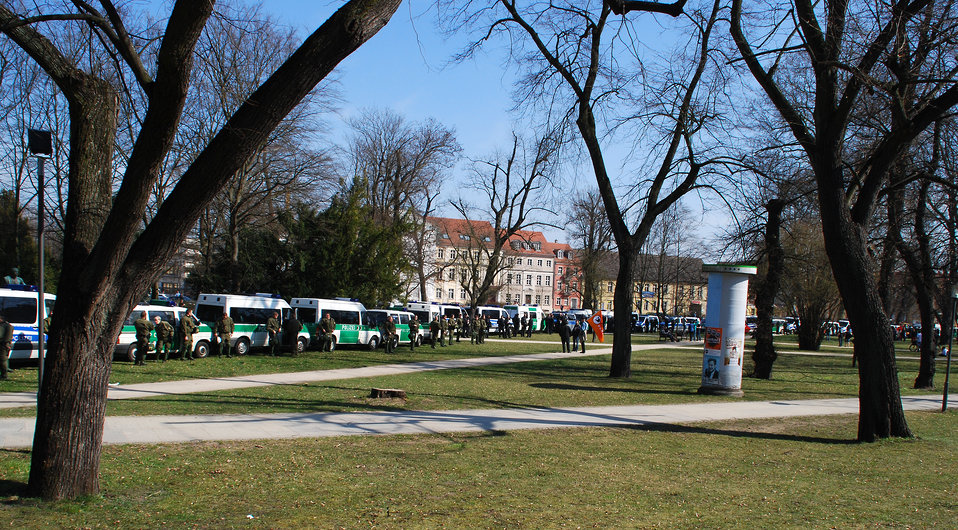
Proteste gegen den Nazi-Aufmarsch am 24.3.2012 in Frankfurt (Oder)